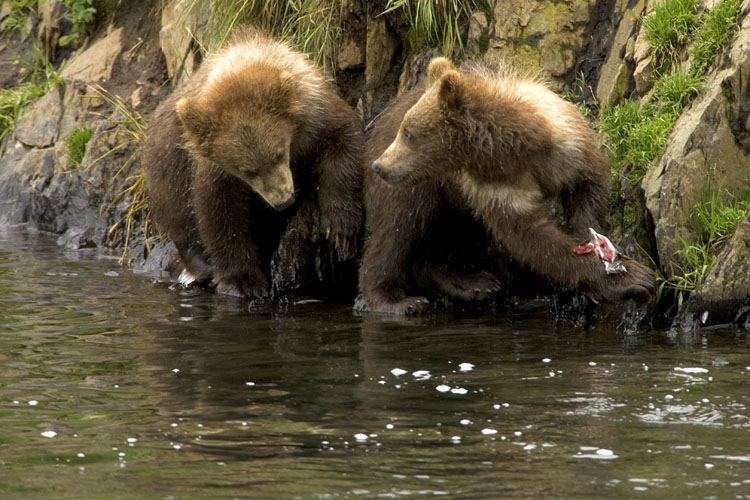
KOD Hildebrand (39)

Kodiak National Wildlife Refuge- Wildlife